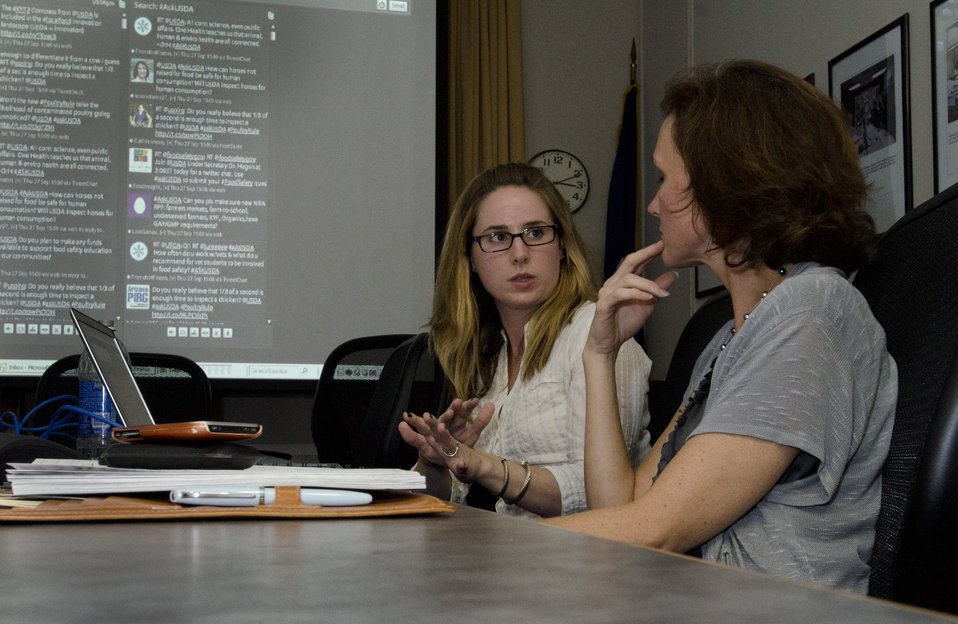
Dr. Elisabeth Hagen, Under Secretary for Food Safety and Inspection Service, (right) assisted by Web Communications Director Amanda Eamich, holds virtual office hours on Twitter for 'It’s National Food Safety Education Month!' on Thursday, September 27, 2012 at the U.S. Department of Agriculture in Washington, D.C.